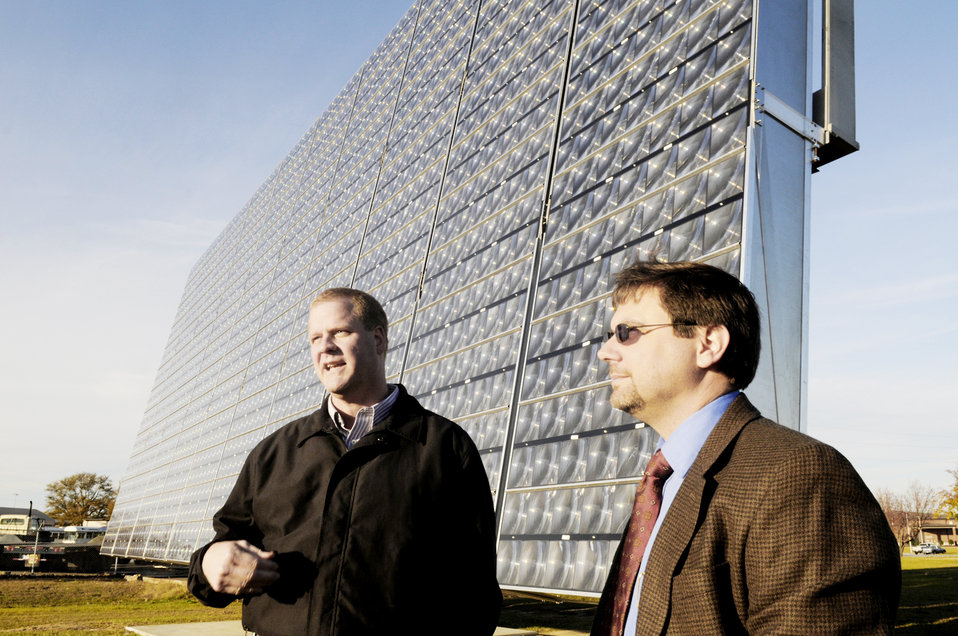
Robins home to Southeast's first-of-its-kind solar technology

Scott Slyfield and Robert David talk about the Air Force's Advanced Power Technology Office 25kW Tracking Solar Array recently at Robins Air Force Base, Ga. Mr. David is an engineering supervisor and head of the APTO office. Mr. Slyfield is an APTO program manager.